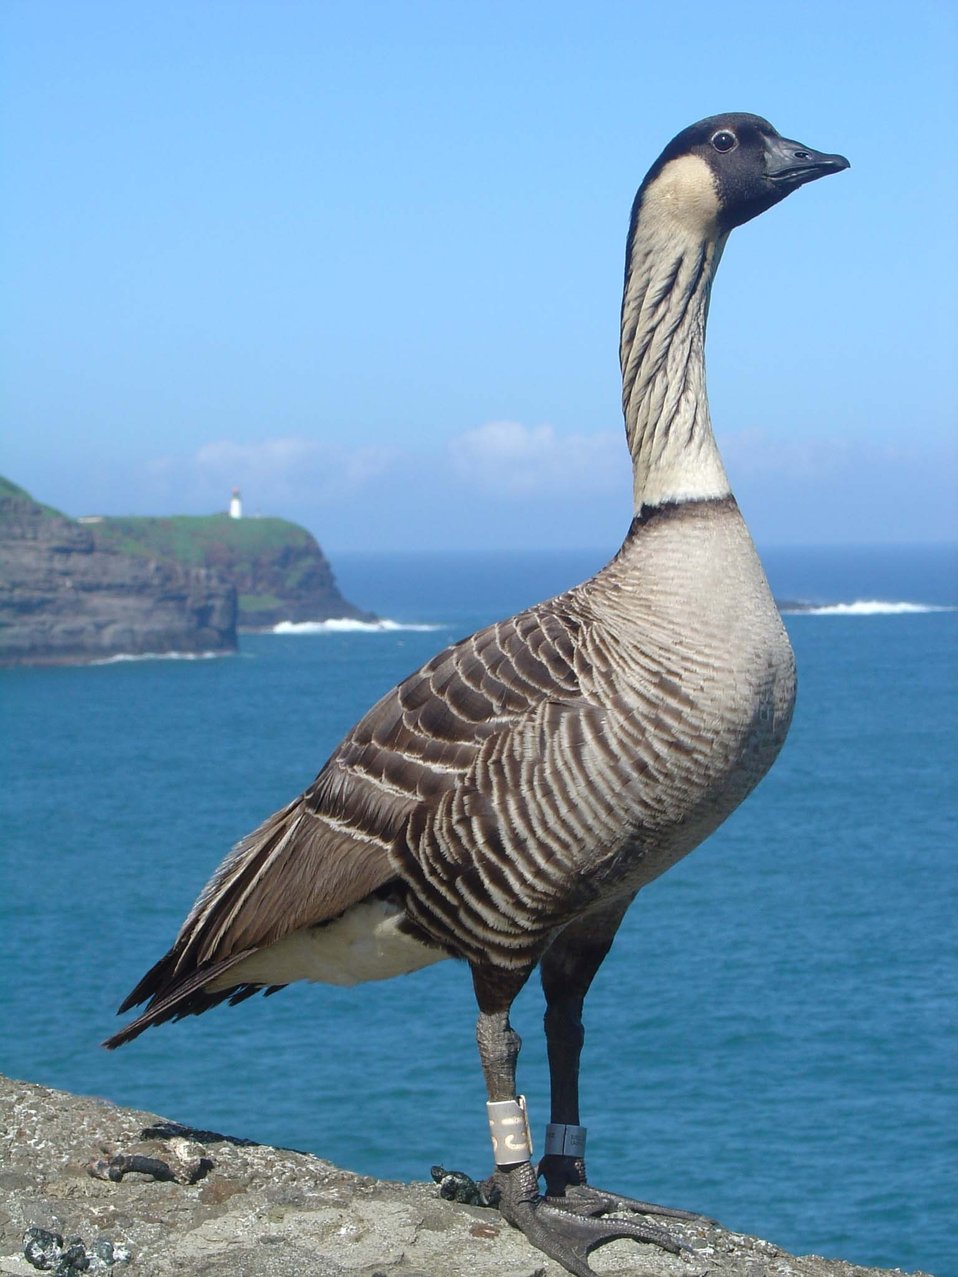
Nene

Lucky visitors to Kilauea Point National Wildlife Refuge in Hawaii may catch a glimpse of the endangered nene, the state bird also known as the Hawaiian goose.